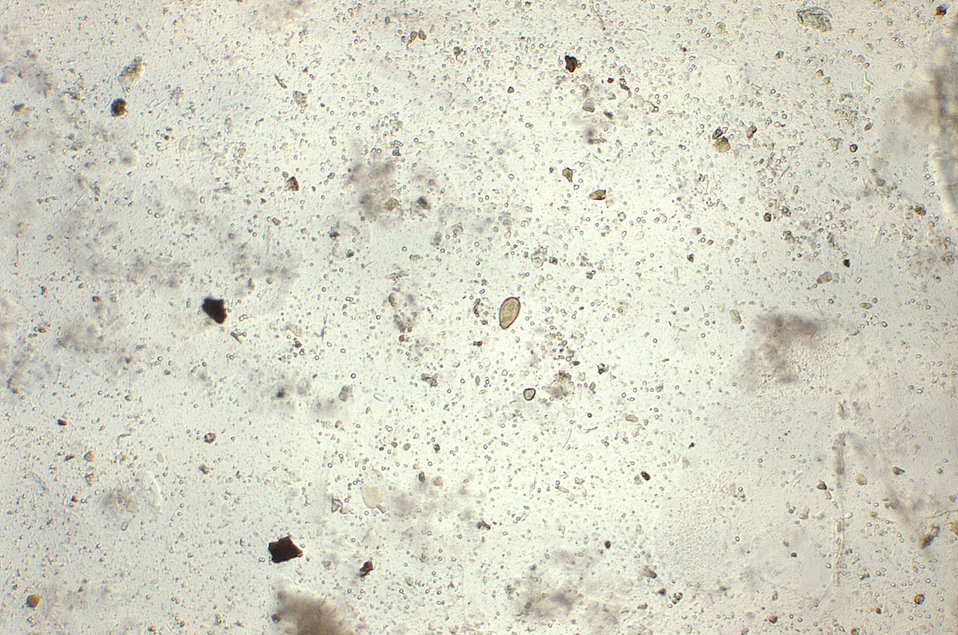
This micrograph reveals an egg from the Oriental, or Chinese liver fluke, Clonorchis sinensis; Mag. 128X.